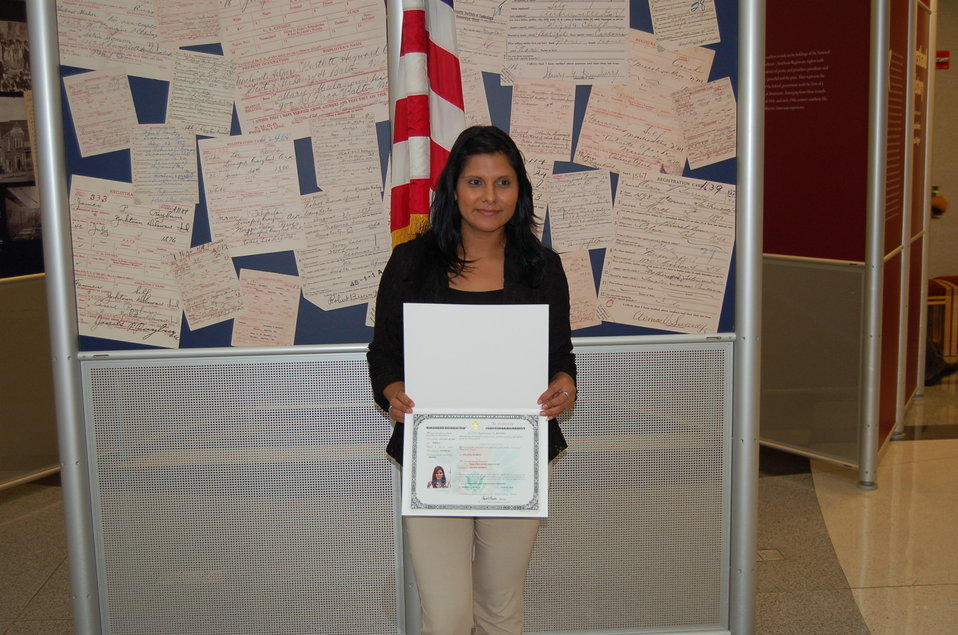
New Citizens